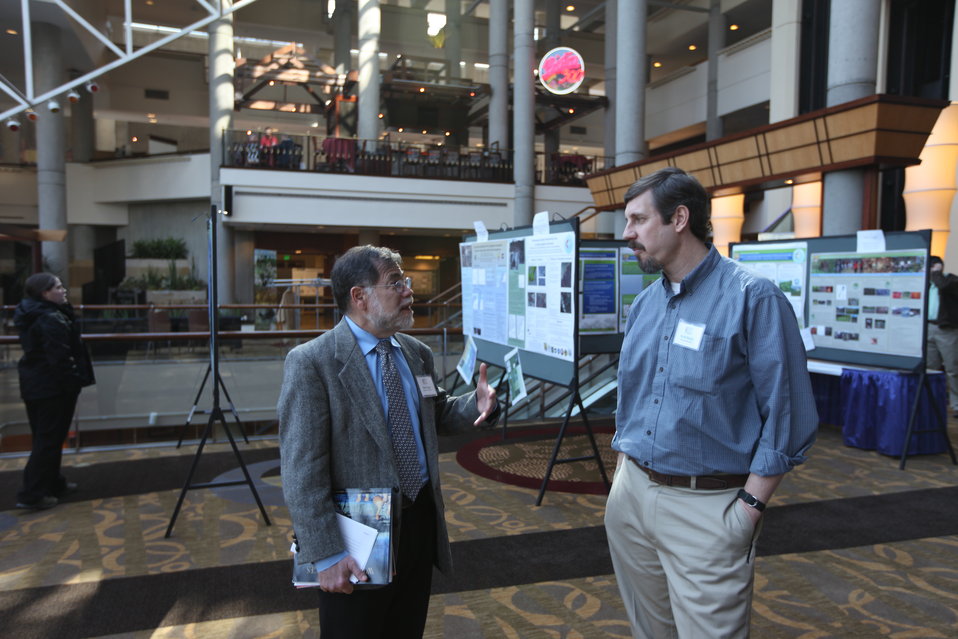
Collaboration

A U.S. Fish and Wildlife Service biologist speaking with Alan Nogee from the Union of Concerned Scientists at the Northeast Region Biologists Conference.